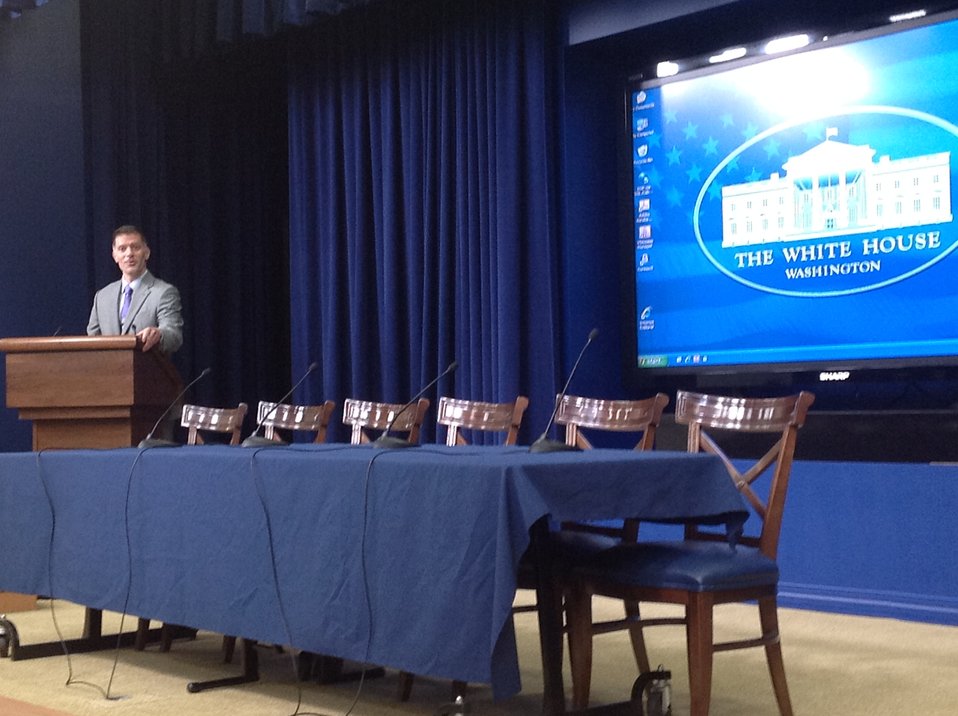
Dr. Grant Golfax

WH 2012 World Hepatitis Day Event